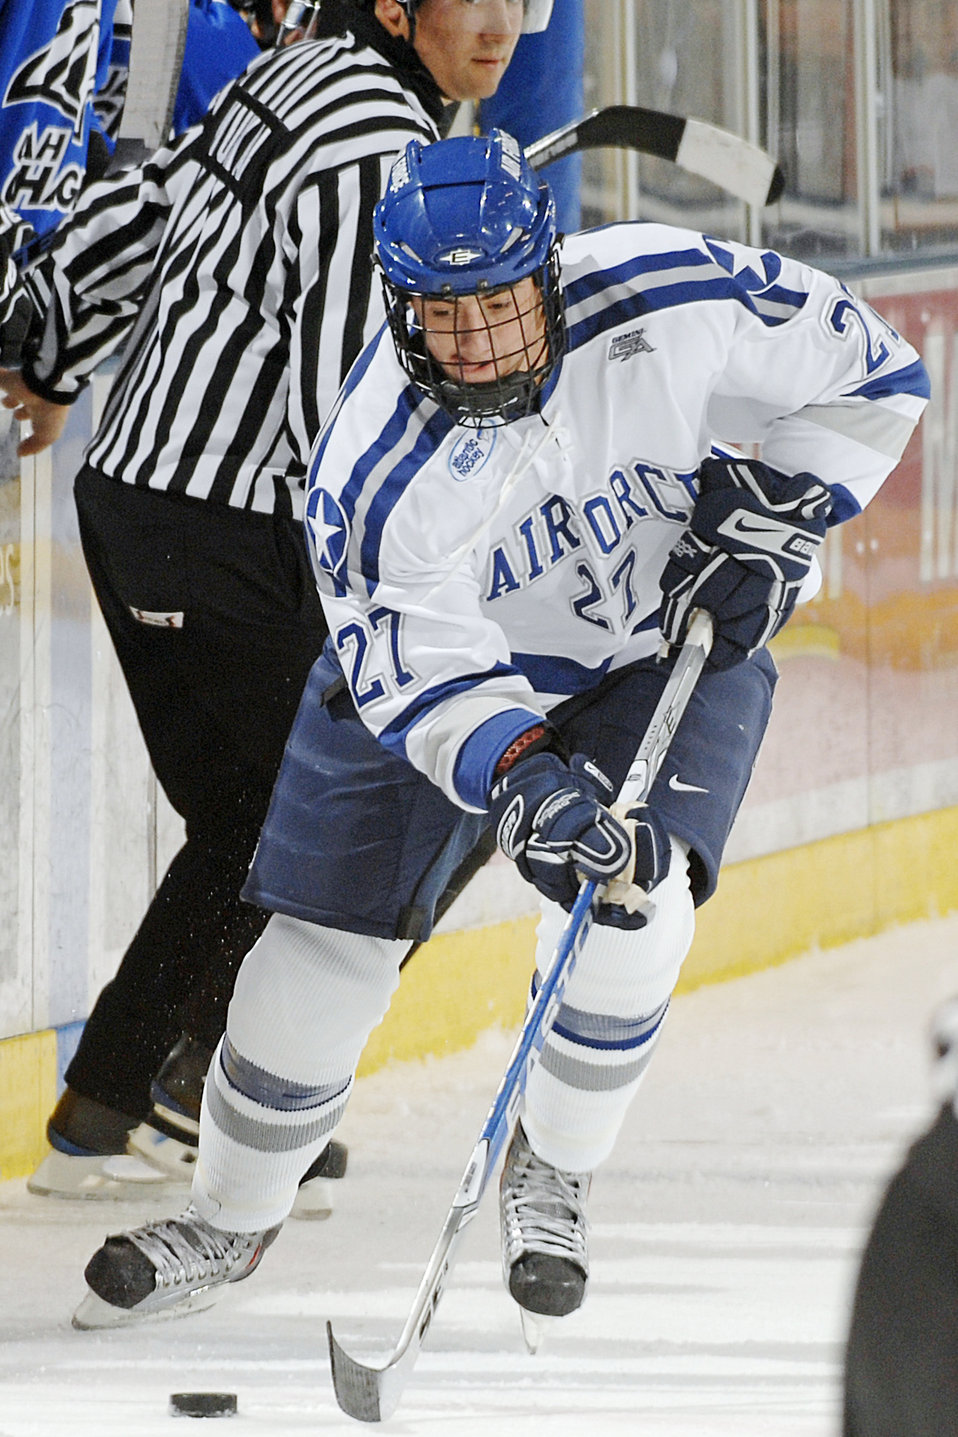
Falcons get out-Charged!

U.S. Air Force Academy Falcon freshman John Kruse takes charge against the University of Alabama-Huntsville Chargers at the Cadet Ice Arena Oct 17, 2009. The UAH Chargers held off the Falcons for a 4-2 win. Air Force extended its school record regular-season sellout streak to 10 games as 2,534 fans watched in a jammed arena.